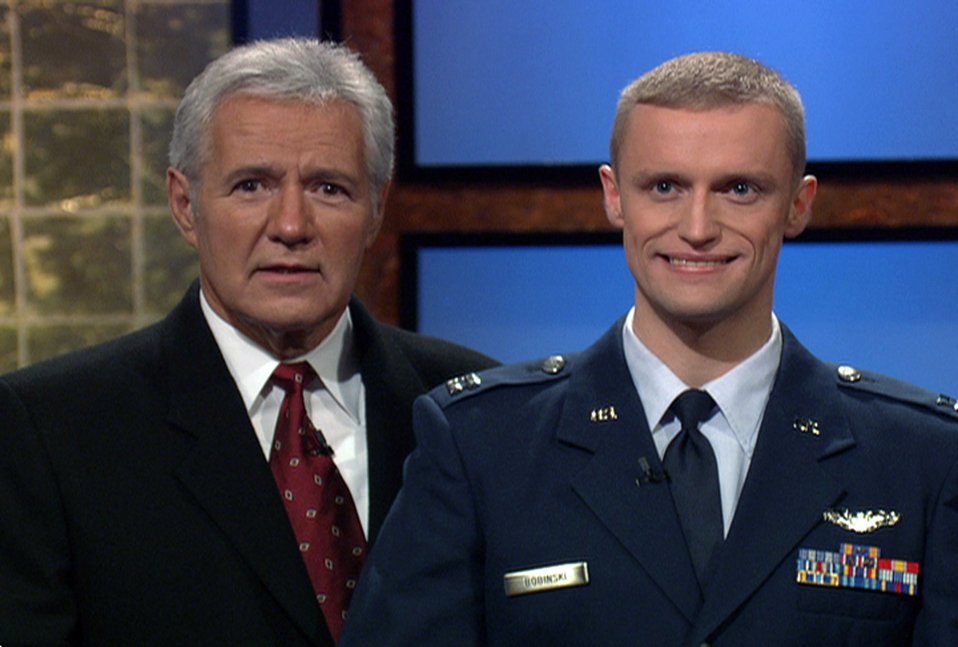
Elmendorf pilot to appear on 'Jeopardy!'